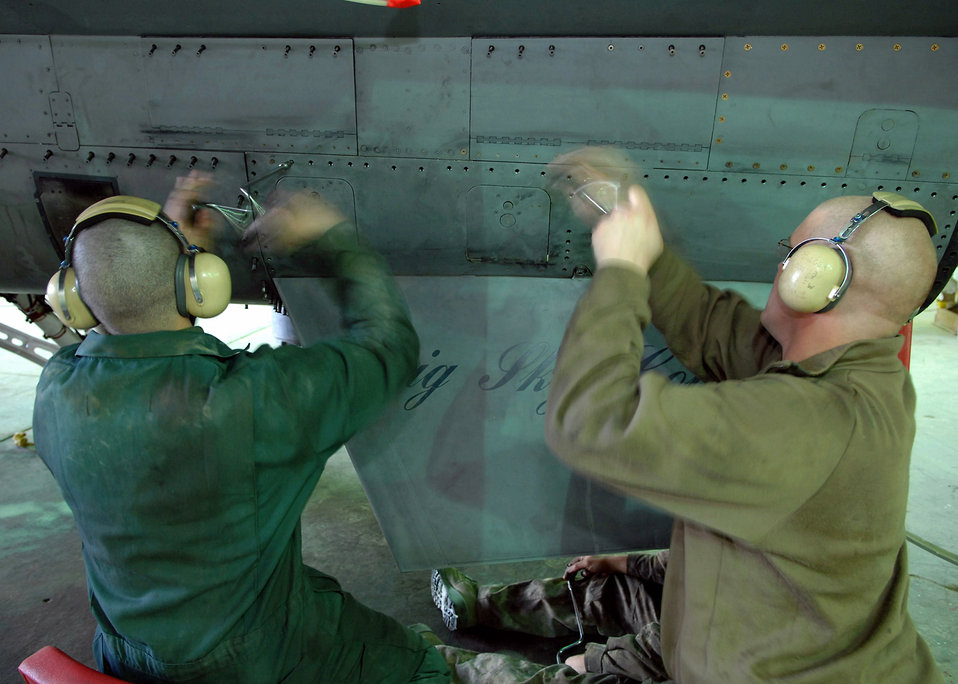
Tune-up time

Senior Airmen Adam Fink and Christopher Jaeger unscrew the left ventral fin of an F-16 Fighting Falcon Feb. 22 at Balad Air Base, Iraq. During a phase inspection, all panels and covers are taken off of the aircraft for preventative maintenance on the aircraft systems and equipment. The aircraft crews fly missions in support of Operation Iraqi Freedom. Both Airmen are 332nd Expeditionary Maintenance Squadron crew chiefs deployed from the Wisconsin National Guard.